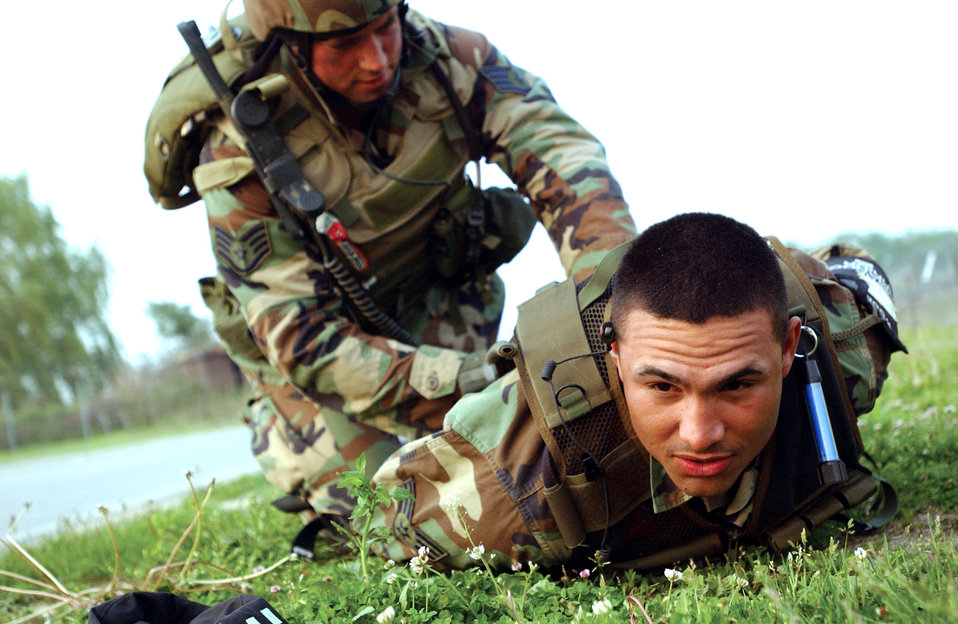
Commando Warrior prepares Airmen for war on terrorism

Staff Sgt. Jeremiah Glamann holds down Senior Airman Lamar Woods in a simulated fight during a Commando Warrior class exercise at Osan Air Base, South Korea. Commando Warrior trains Airmen throughout the Pacific Air Forces area for deployments supporting the war on terrorism. Sergeant Glamann is assigned to Elmendorf Air Force Base, Alaska. Airman Woods is a course instructor.